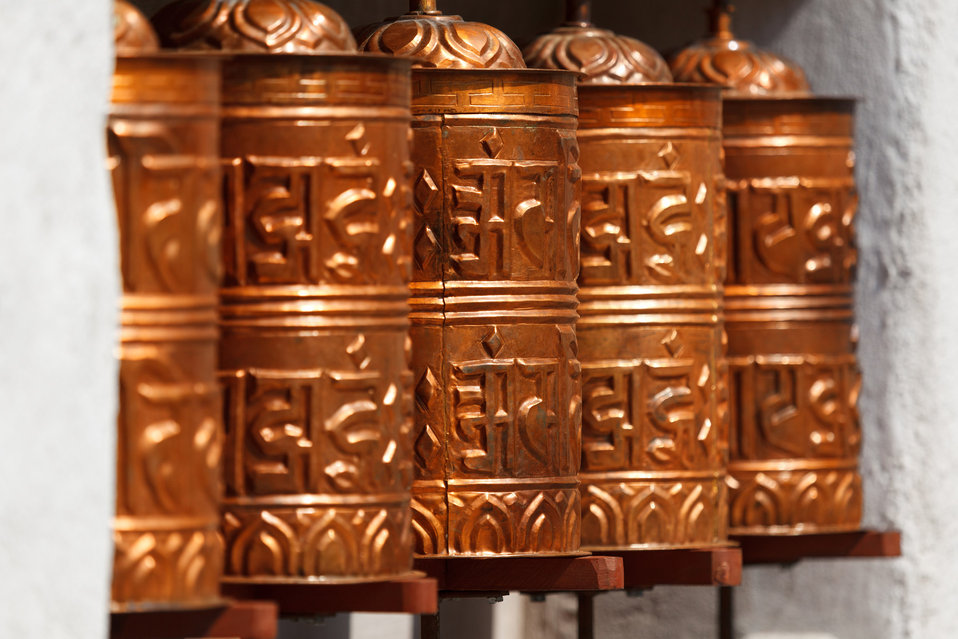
Prayer wheels

Tibetan prayer wheels.